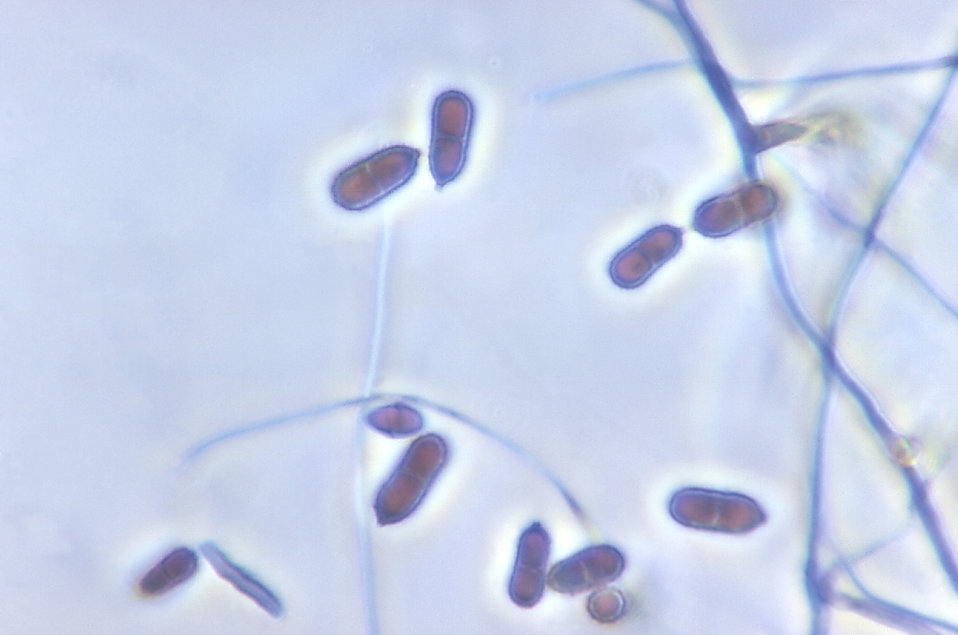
Magnified 1125X, this photomicrograph depicted a number of conidiophores, along with numbers of accompanying two-celled conidia of Ochroconis constricta, fungi, formerly known as Scolecobasidium constrictum. A dematiaceous fungal organism, O. constrictum is also characteristically a dark-walled, pigmented organism.